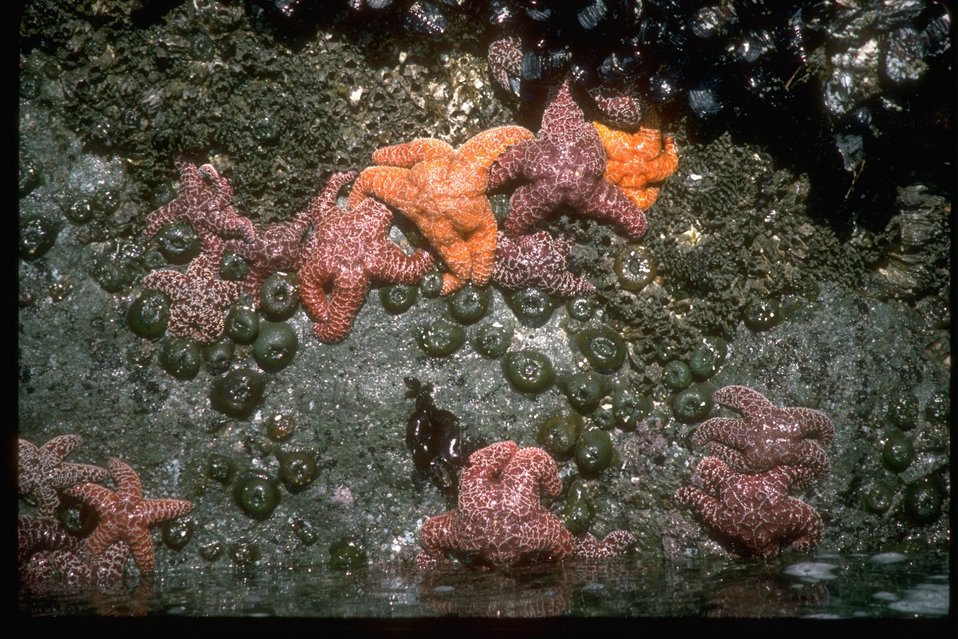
Yaquina Head Tidepool.